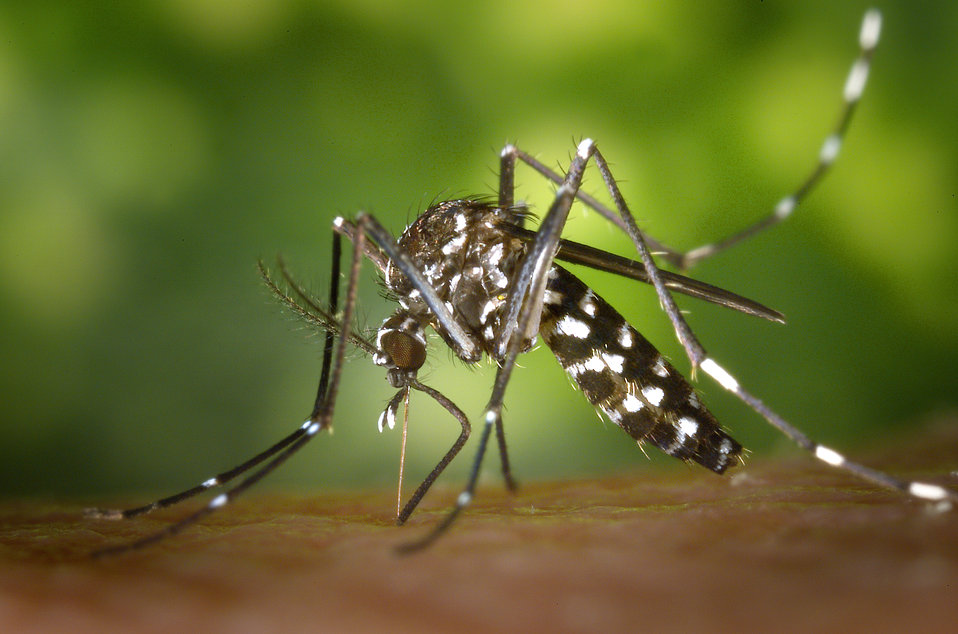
A female Aedes albopictus mosquito feeding on a human host.